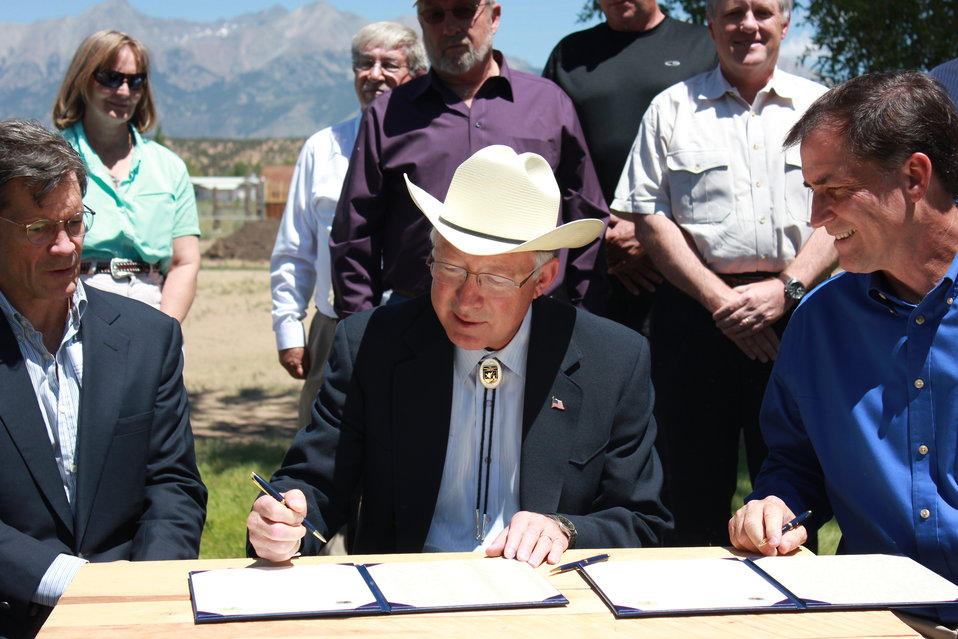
Historic Conservation Easement in Sangre de Cristo Mountains